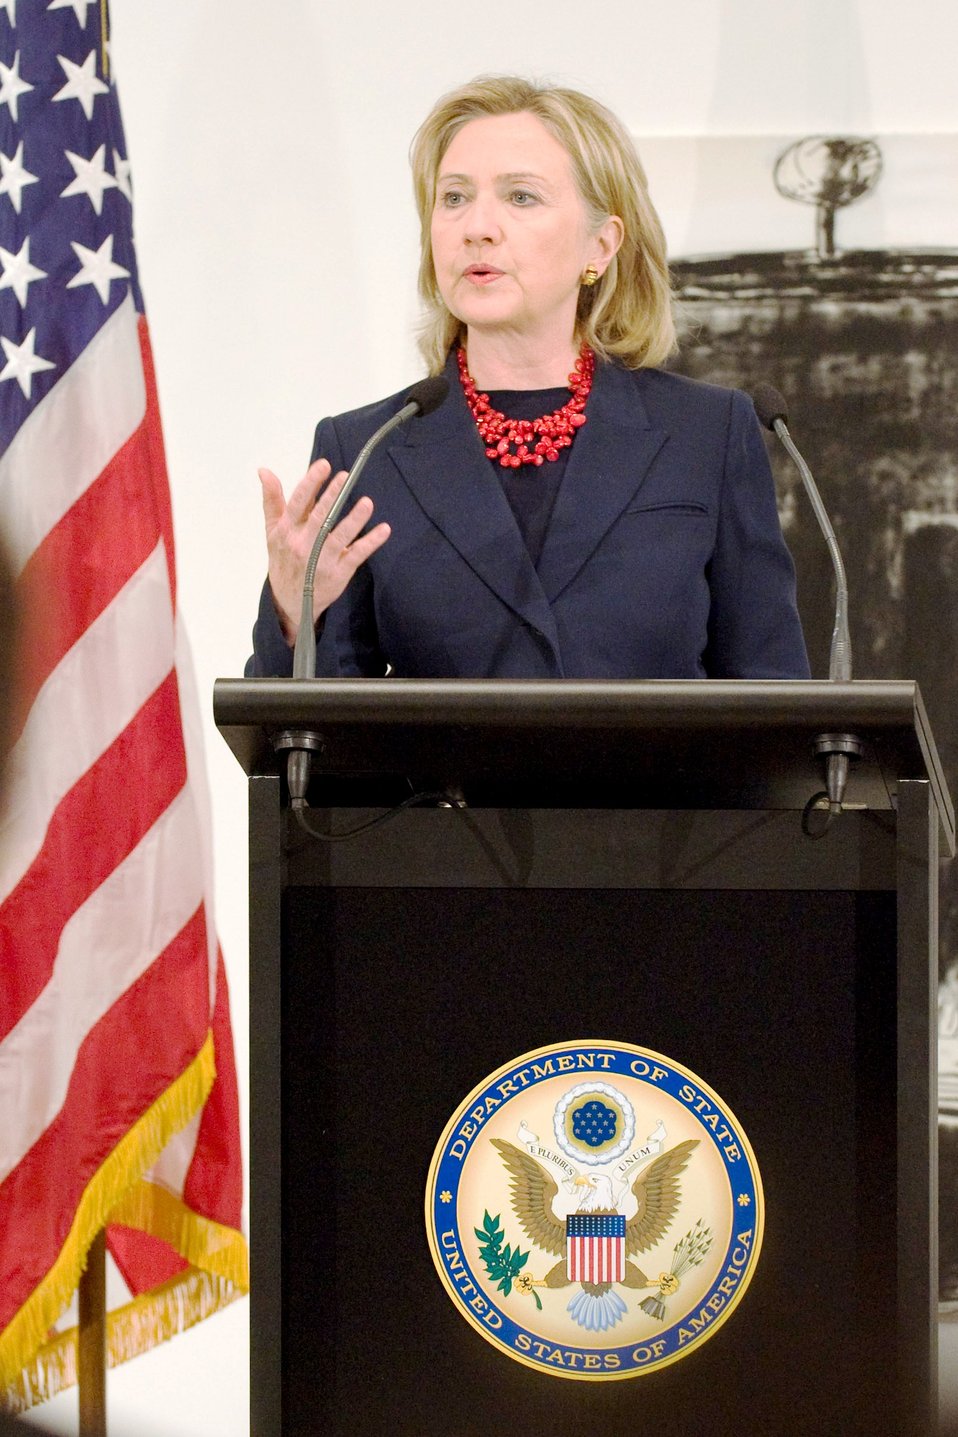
Secretary Clinton Delivers Remarks at Reception for U.S. Exporters

U.S. Secretary of State Hillary Rodham Clinton delivers remarks at a reception for U.S. exporters hosted by the American Chamber of Commerce at the Centre of Contemporary Art in Christchurch, New Zealand, on November 5, 2010.